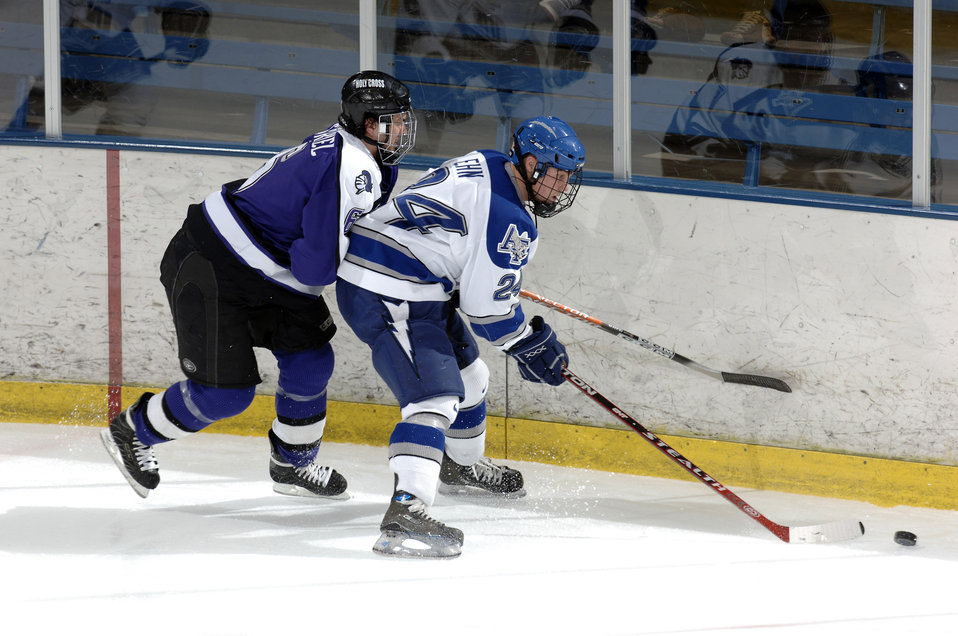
Hockey: Academy player finalists for national hockey award

U.S. Air Force Academy Eric Ehn skates in action earlier this year against Holy Cross. The junior center is one of three finalists for the Hobey Baker Memorial Award, college hockey's most prestigious individual honor.